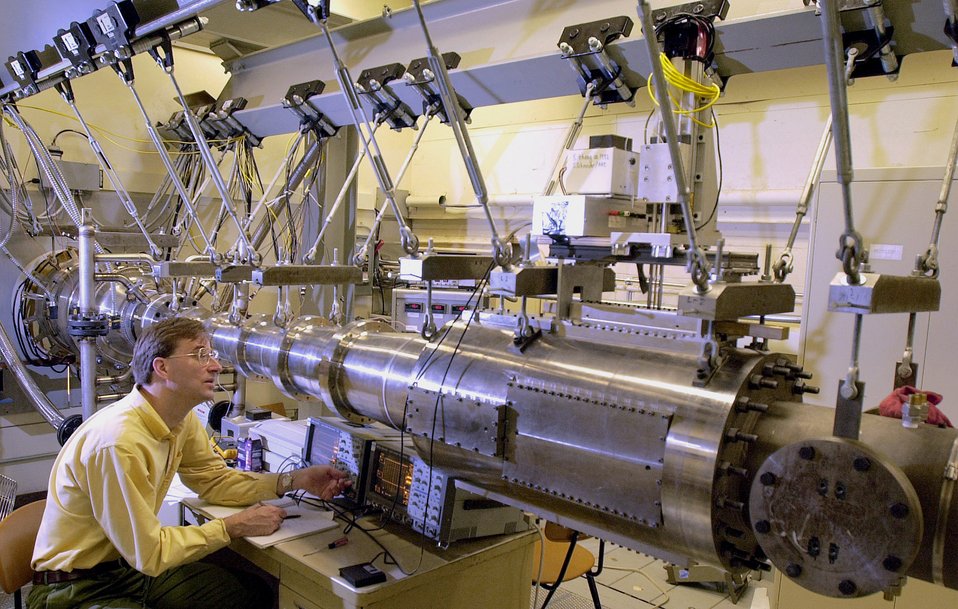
Wind tunnel helps determine impact of hypersonic speeds

Steven Schneider, an aerospace engineer and professor in Purdue's School of Aeronautics and Astronautics, operates the university's one-of-a-kind wind tunnel, which runs quietly at Mach 6, or six times the speed of sound. Researchers will use the $1 million wind tunnel to help design advanced aircraft that travel at hypersonic speeds, or faster than Mach 5, which is about 4,000 mph at sea level.